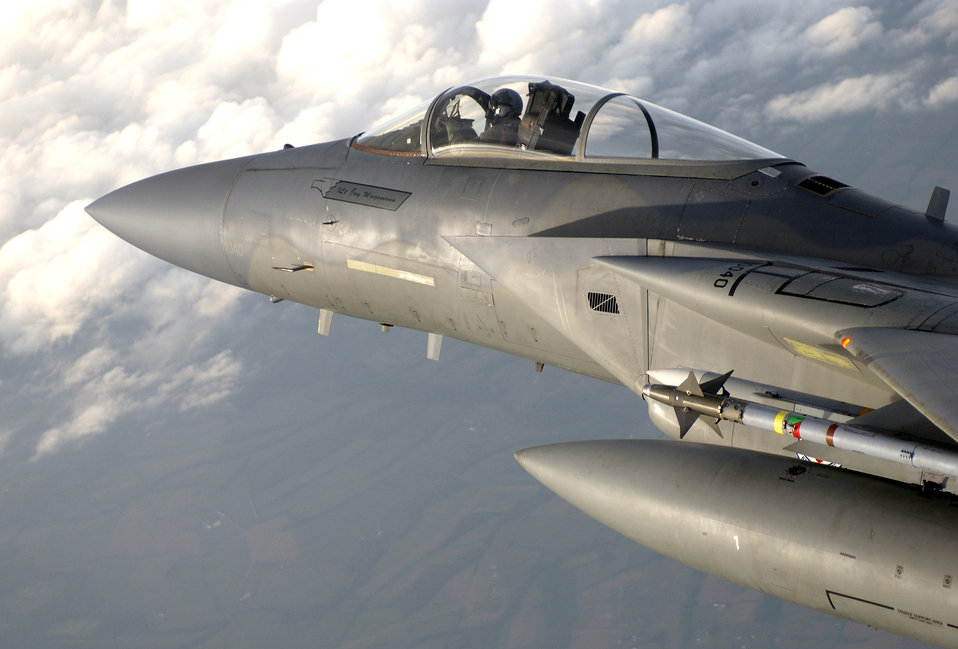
Sky patrol

LANGLEY AIR FORCE BASE, Va. -- Maj. John Braun patrols the sky during a combat air patrol mission from here July 1. Pilots patrolled the sky over the Washington, D.C., area providing presidential support during the Fourth of July weekend. Major Braun is an F-15 Eagle pilot with the 94th Fighter Squadron.